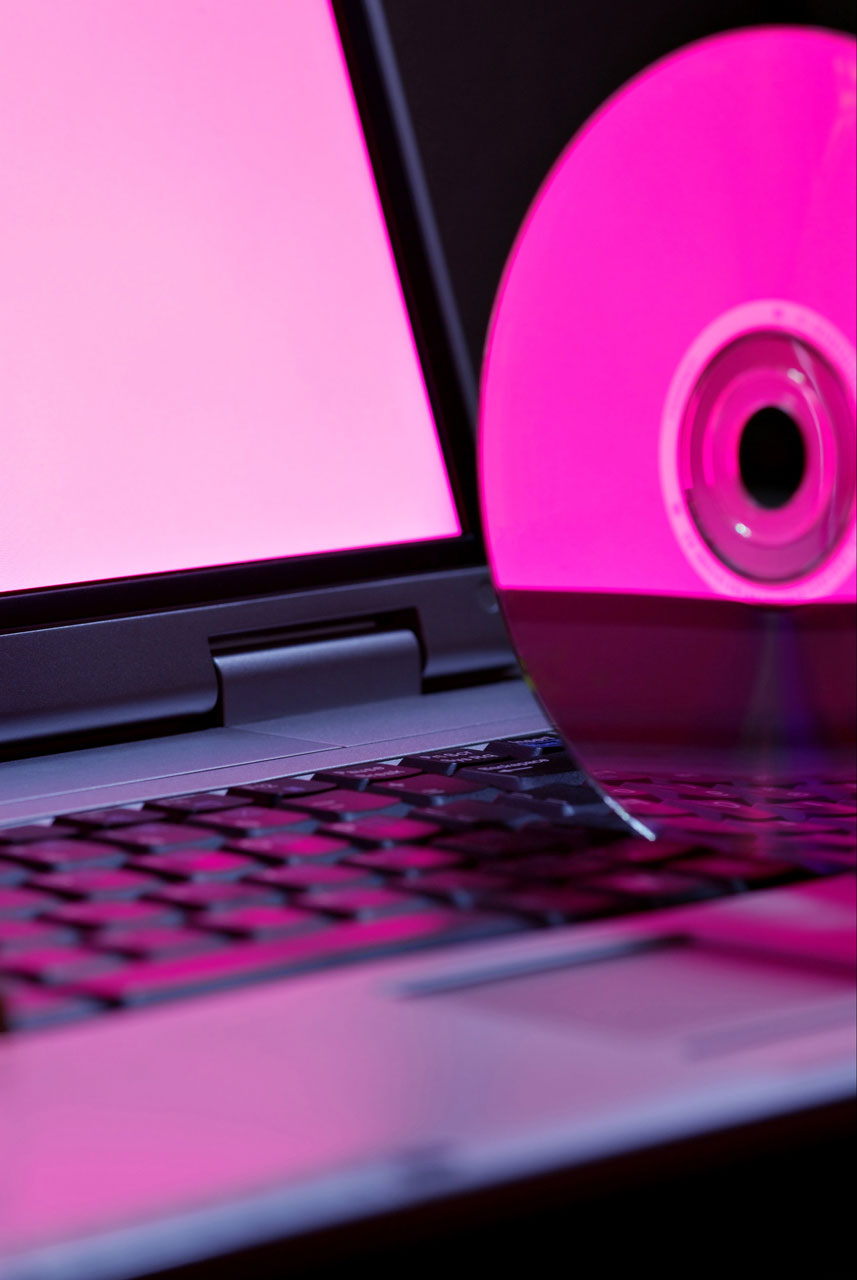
Technology in style.